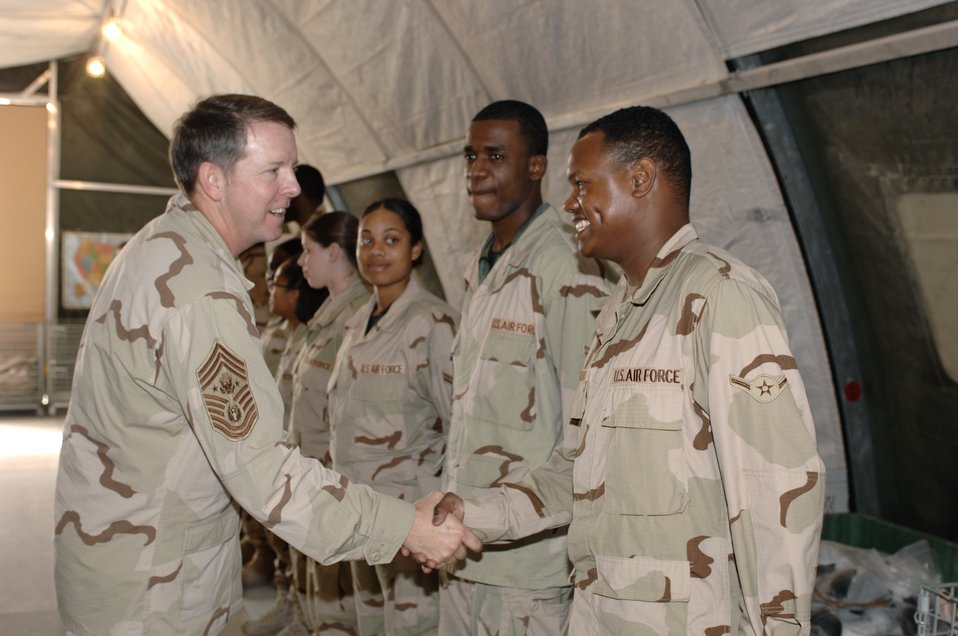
Leaders address deployments, total force concept

Chief Master Sergeant of the Air Force Rodney J. McKinley shakes hands with Airman Damian Dawkins Feb. 5 in Southwest Asia. Chief McKinley spoke to Airmen about changes in the Air Force that will be implemented in upcoming months. Airman Dawkins is a 379th Expeditionary Logistics Readiness Squadron mobility technician.